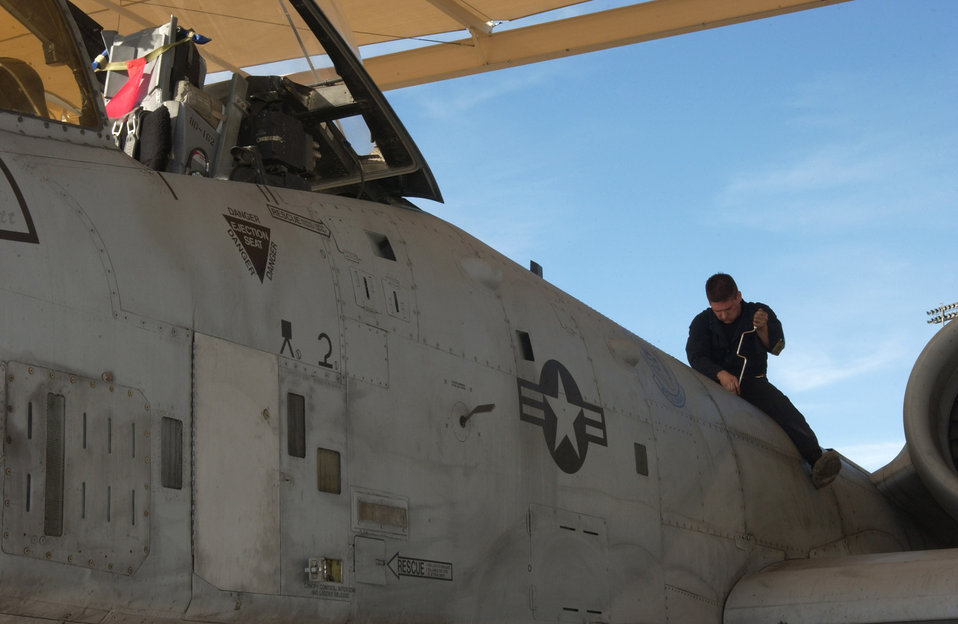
This A-10's getting ready to roll

Staff Sergeant Astolfo Mercado closes a panel on an A-10 Thunderbolt II Oct. 28 on the flightline of Davis-Monthan Air Force Base, Ariz. Sergeant Mercado is a crew chief from the 355th Aircraft Maintenance Squadron.